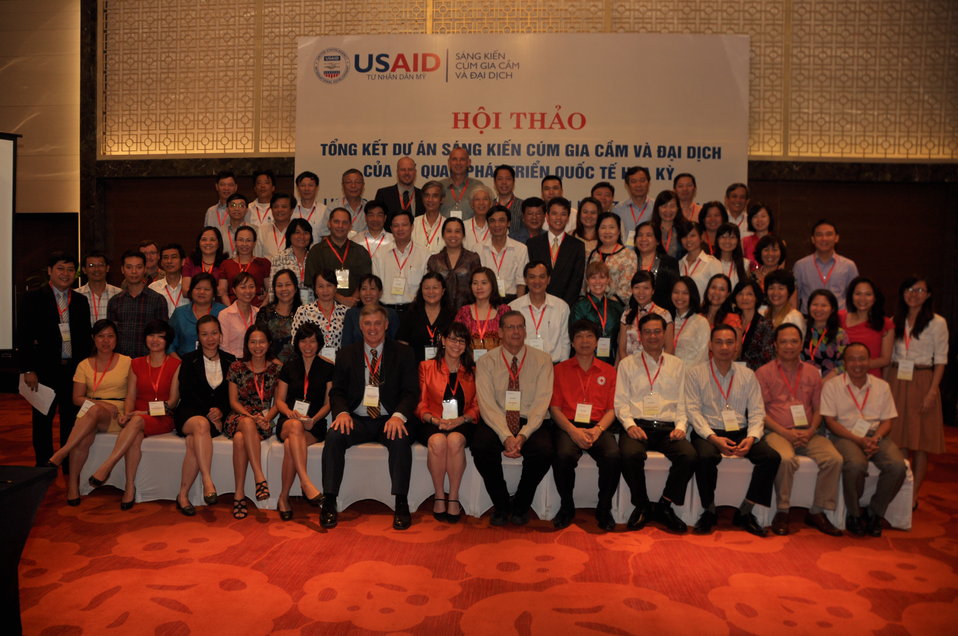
USAID Avian and Pandemic Influenza Initiative

Dissemination Workshop
Hanoi, August 6, 2013.